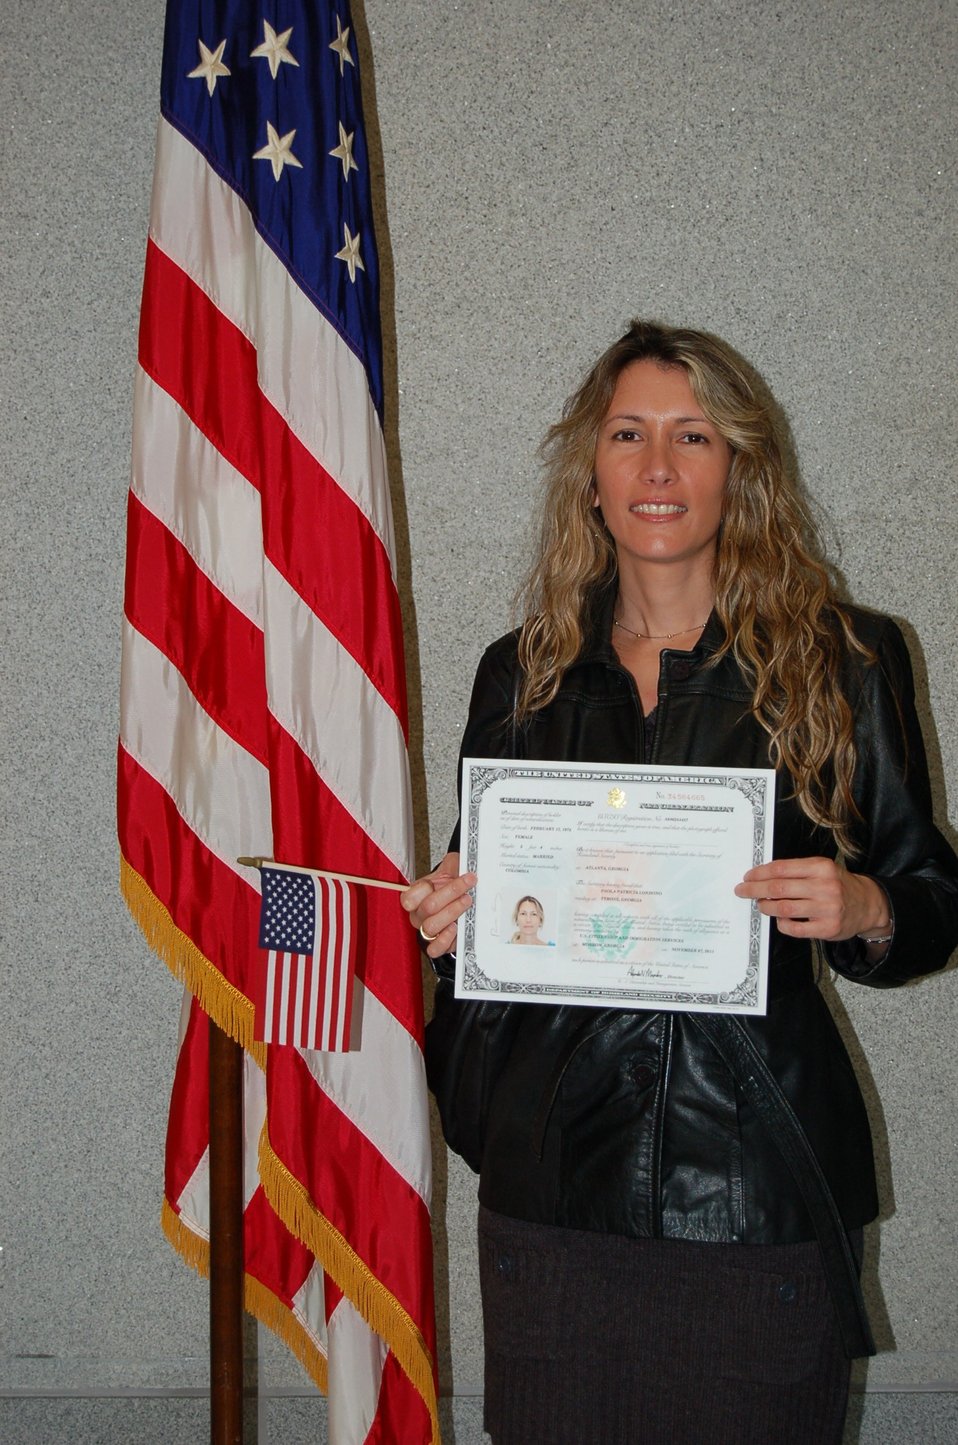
New Citizens